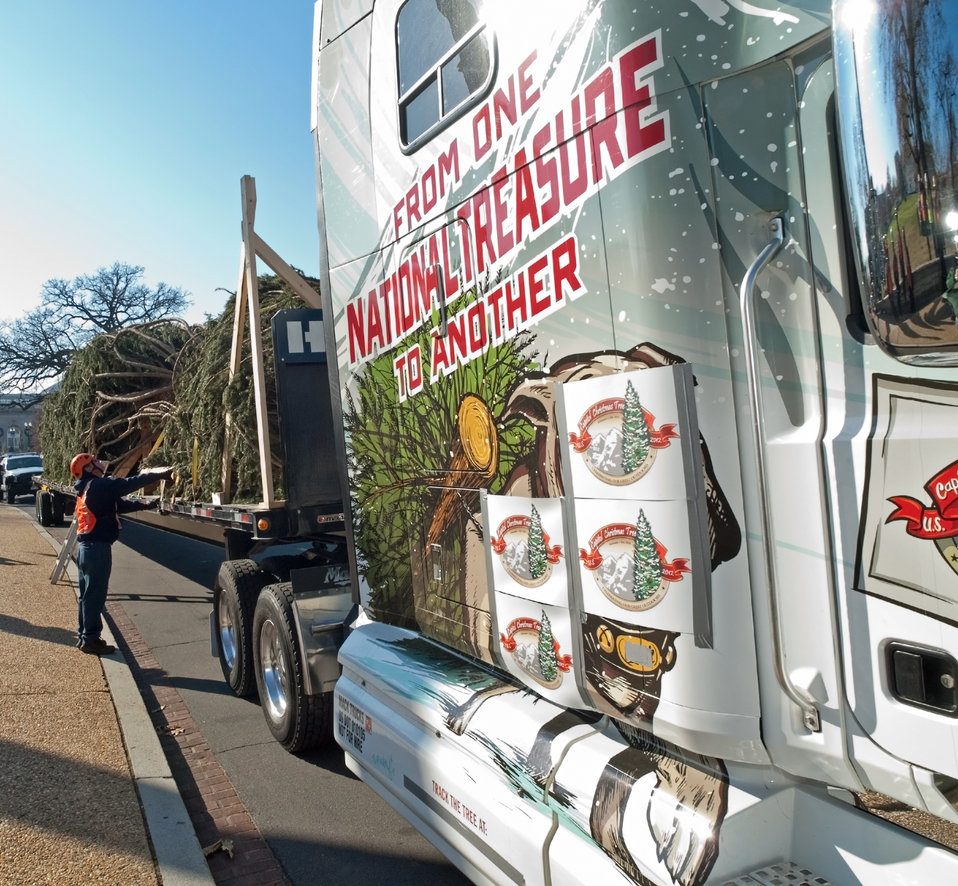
The 2012 Capitol Christmas Tree arrives in Washington, D.C. on Nov.26, 2012. The 73-foot Englemann spruce traveled from the White River National Forest in Colorado.